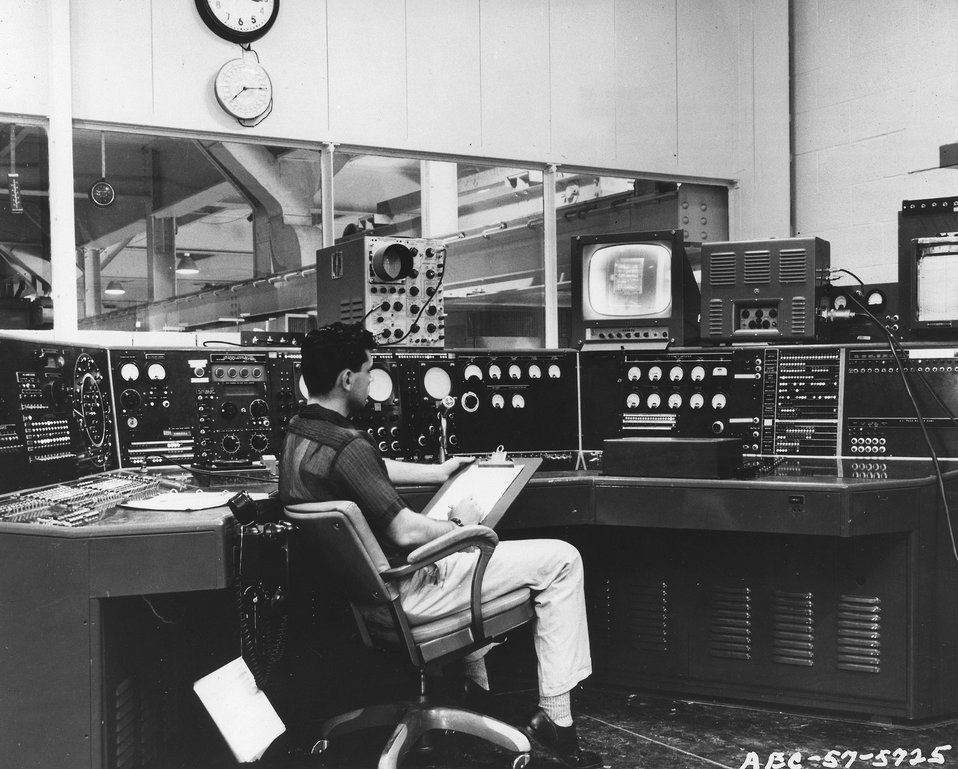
Picture of Sodium Iodide Mosaic used to view 3 Billion Electron Volt External Proton Beam from Cosmotron appears on TV screen at remote monitoring station. c. 1957